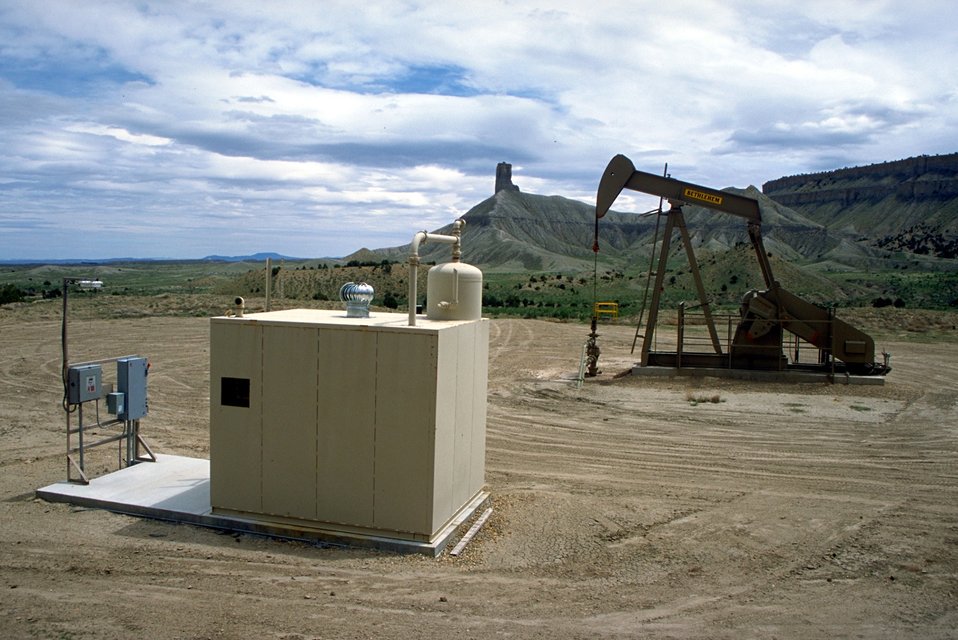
Pump unit producing coal bed methane near Price, Utah.